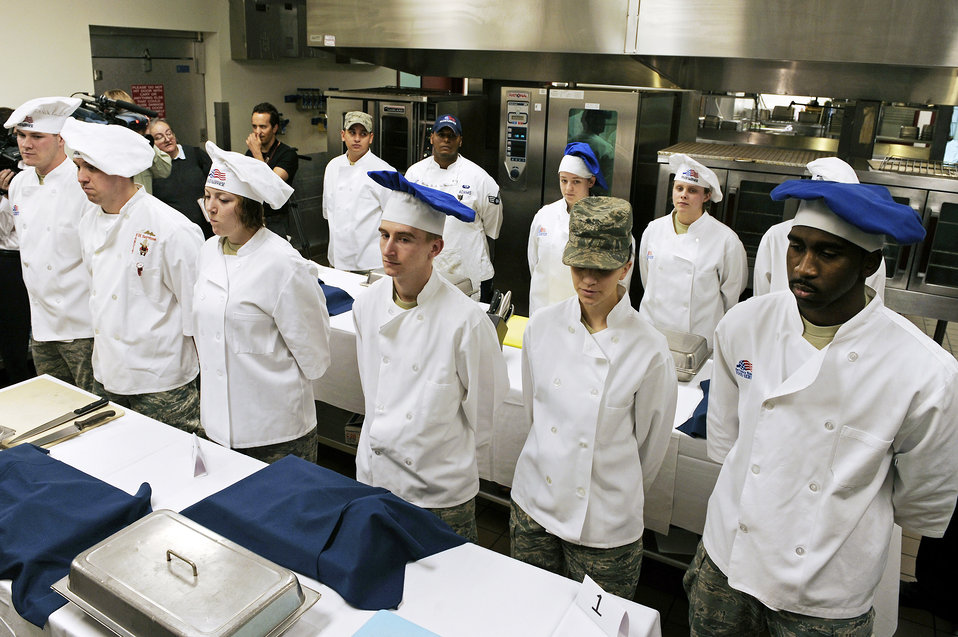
Ellsworth Airmen participate in cooking competition

Four, three-person teams stand ready to begin the second annual